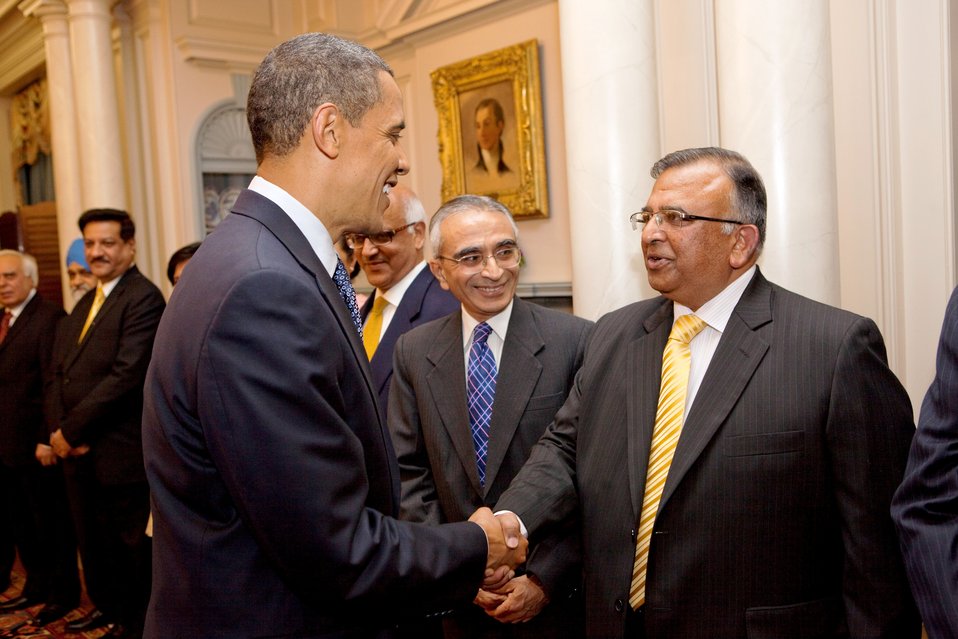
President Obama Shakes Hands With High-Ranking Indian Delegation Member

U.S. President Barack Obama shakes hands with a high-ranking member of the Indian Delegation at the U.S.-India Strategic Dialogue reception at the U.S. Department of State in Washington, D.C., on June 3, 2010.